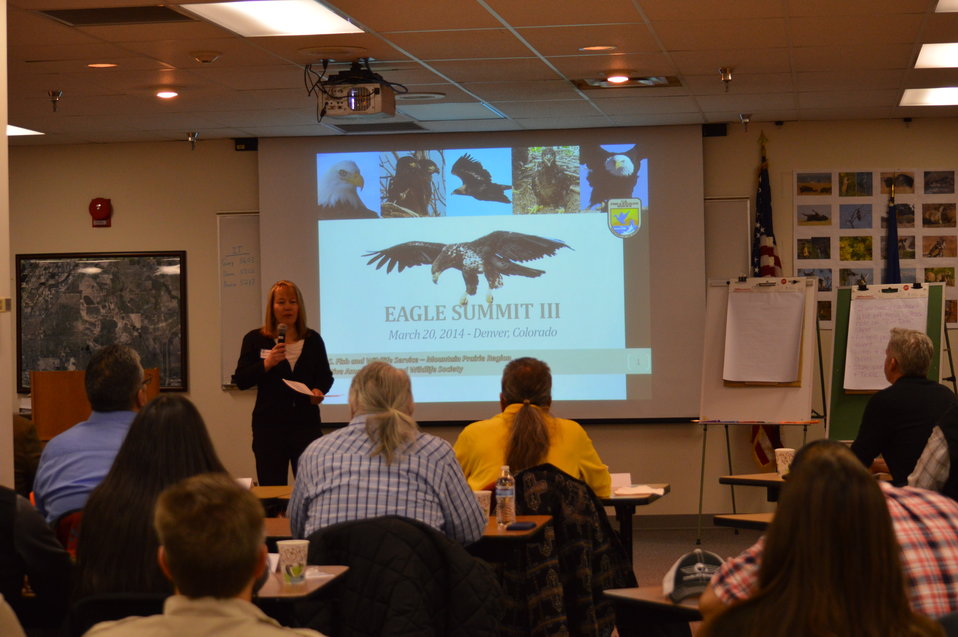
Eagle Summit III Welcome

Noreen Walsh (Regional Director) welcomes attendees to the Eagle Summit III in Denver, Colorado on March 20, 2014 at the Rocky Mountain Arsenal National Wildlife Refuge.